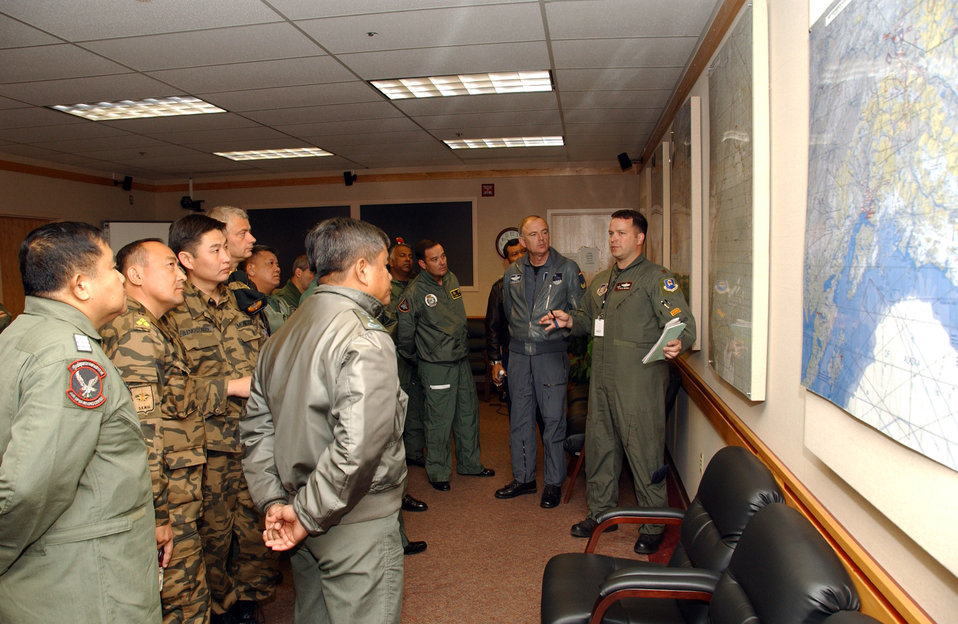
International officers observe Red Flag-Alaska

More than a dozen international officers visit Eielson Air Force Base, Alaska, July 23 to observe Red Flag 07-3 operations. International partners include Japan, Mongolia, Spain, Thailand, Turkey and NATO. Red Flag-Alaska is focused on improving the combat readiness of U.S. and coalition forces and providing training for units preparing for air expeditionary force taskings.